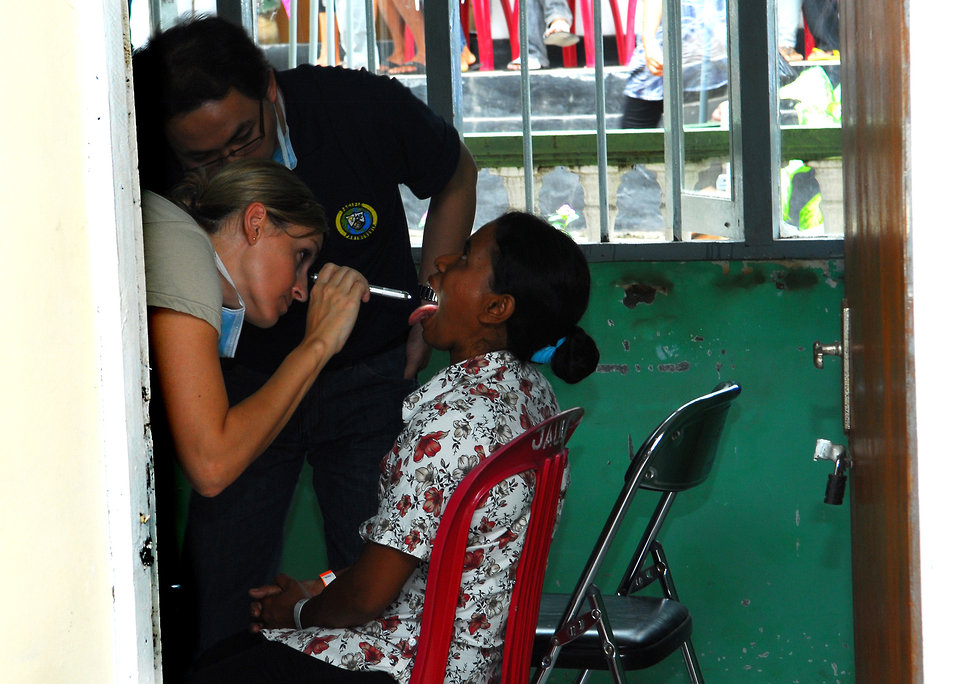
Air Force Capt. Tavalone Performs a General Examination on a Patient

Air Force Capt. Natasha Tavalone performs a general examination on a patient during a medical civic action program in Sulamadaha, Indonesia, on July 20, 2010. The Military Sealift Command hospital ship USNS Mercy (T-AH 19) is in the North Maluku Islands conducting Pacific Partnership 2010, the fifth in a series of annual U.S. Pacific Fleet endeavors conducted in Indonesia as a disaster relief exercise aimed at strengthening regional partnerships.